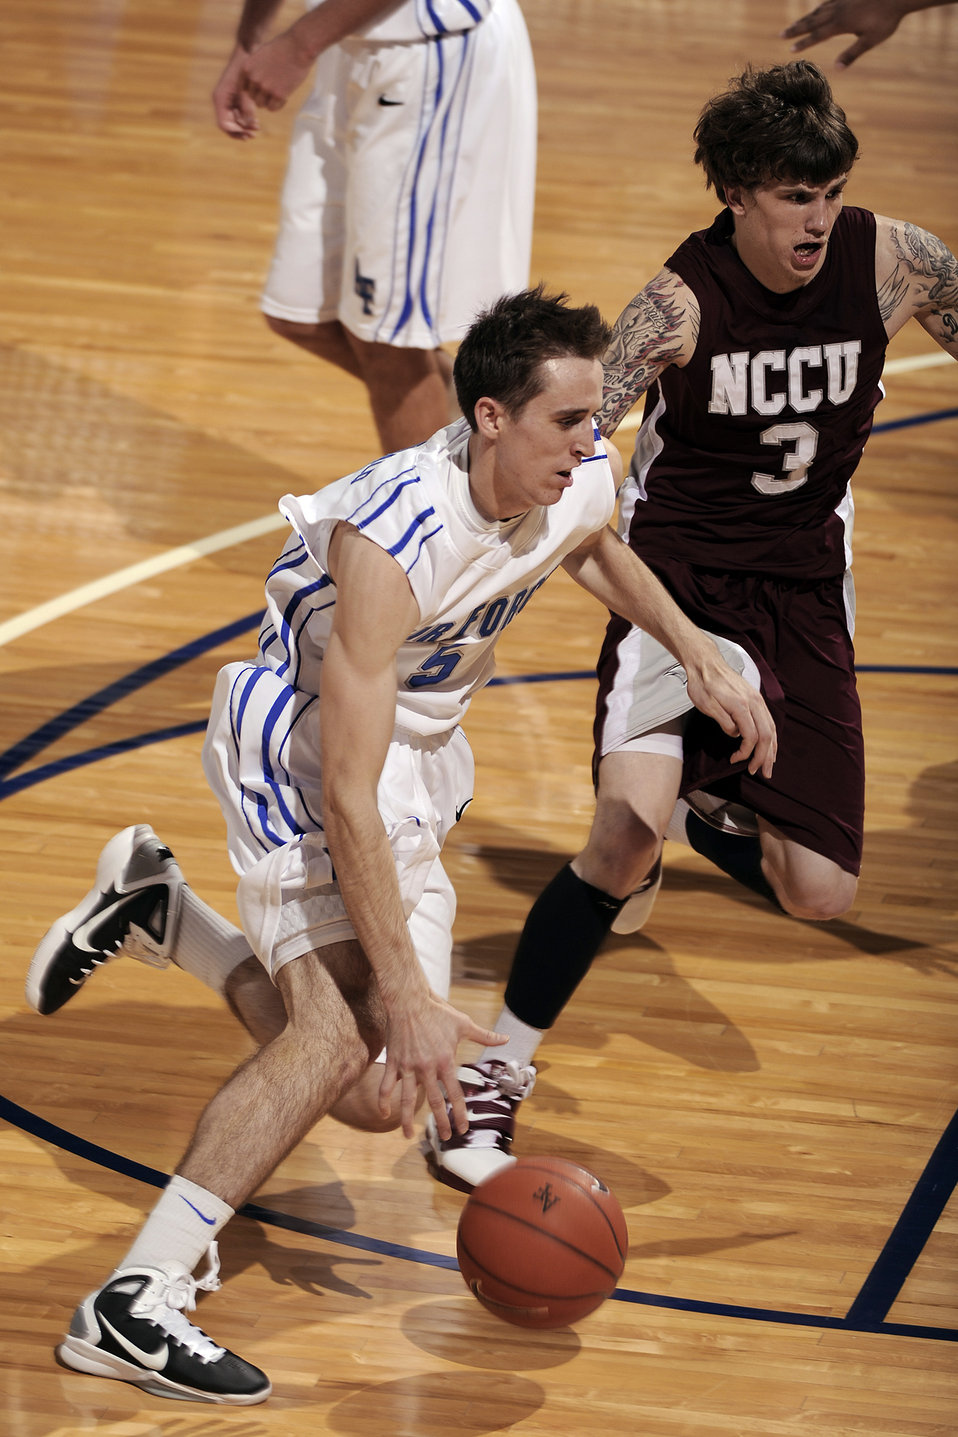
Falcons defeat the Eagles

Falcon Mike Fitzgerald drives around Eagles guard Landon Clement and towards the basket as the U.S. Air Force Academy defeats North Carolina Central 73-56, Dec 11, 2010, at Clune Arena in Colorado Springs, Colo.